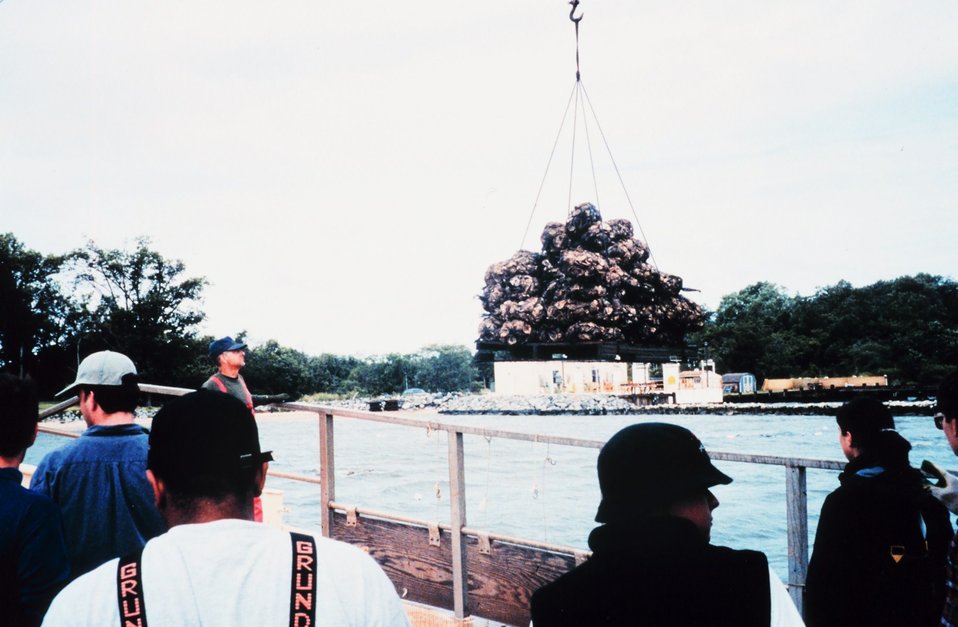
Volunteers assist the Oyster Recovery Partnership in their effort to transplant oyster spat before the population is decimated by the Stylochus flatworm. Pallets are loaded with bags containing the spat and brought on board the ROBERT LEE.